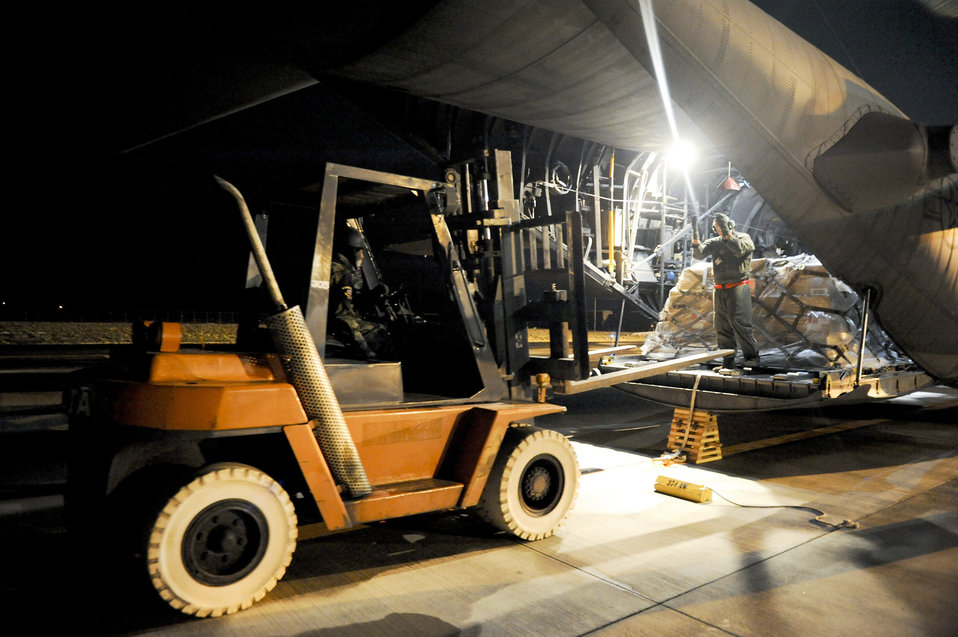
Medical supplies for Japan

Staff Sgt. Charles Kirchen directs a forklift toward a C-130 Hercules March 19, 2011, in Hanamaki, Japan. Sergeant Kirchen is assigned to the 36th Airlift Squadron.